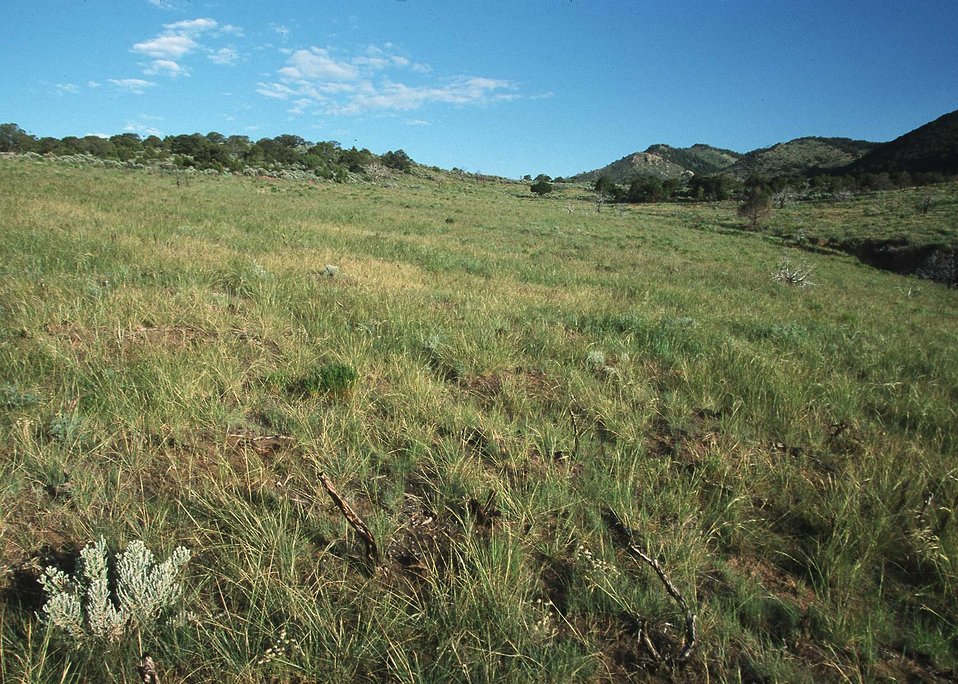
Post-Prescribed Burn vegetation regeneration.